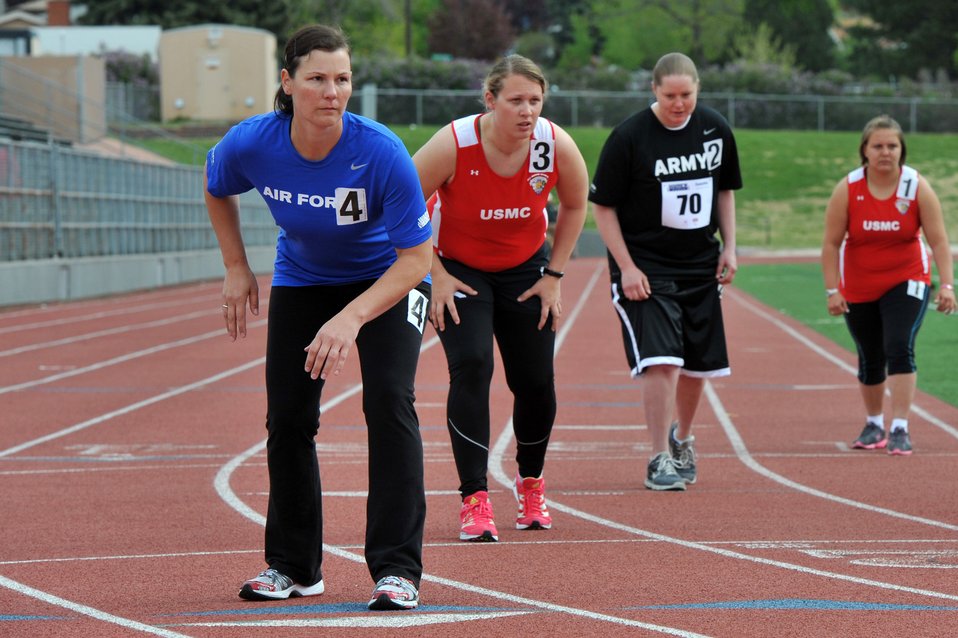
2011 Warrior Games

Air Force athlete Stacy Pearsall waits for the starter’s gun in the 800 meter dash May 17, 2011, during the track competition at the 2011 Warrior Games at the U.S. Olympic Training Center in Colorado Springs, Colo. Some 200 wounded warriors and disabled veterans from all the military services are competing in paralympic-style athletic events May 16 through May 21.